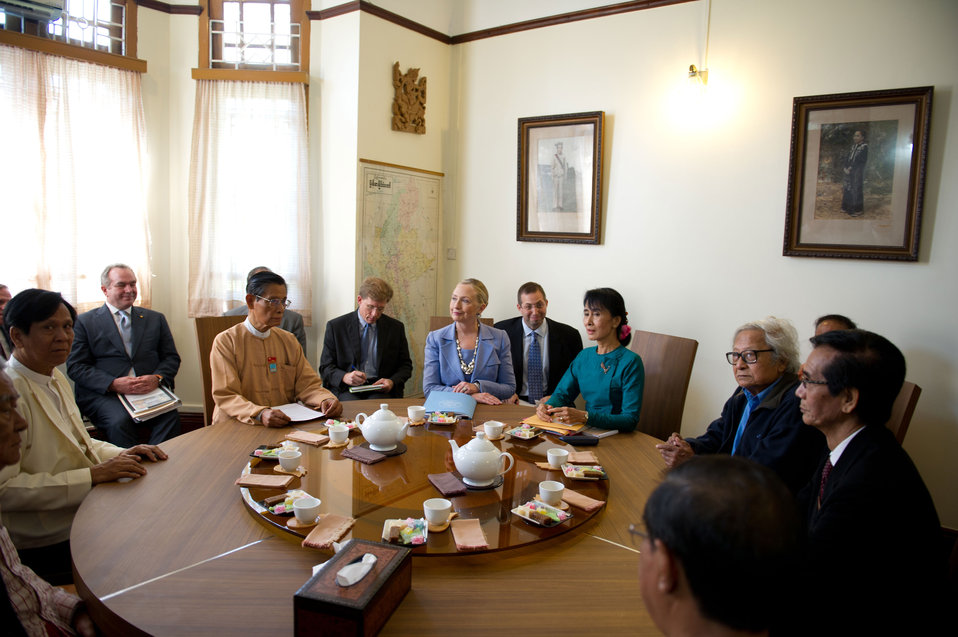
Secretary Clinton Meets With Daw Aung San Suu Kyi

U.S. Secretary of State Hillary Rodham Clinton visits Daw Aung San Suu Kyi at her house in Rangoon, Burma, on December 2, 2011.